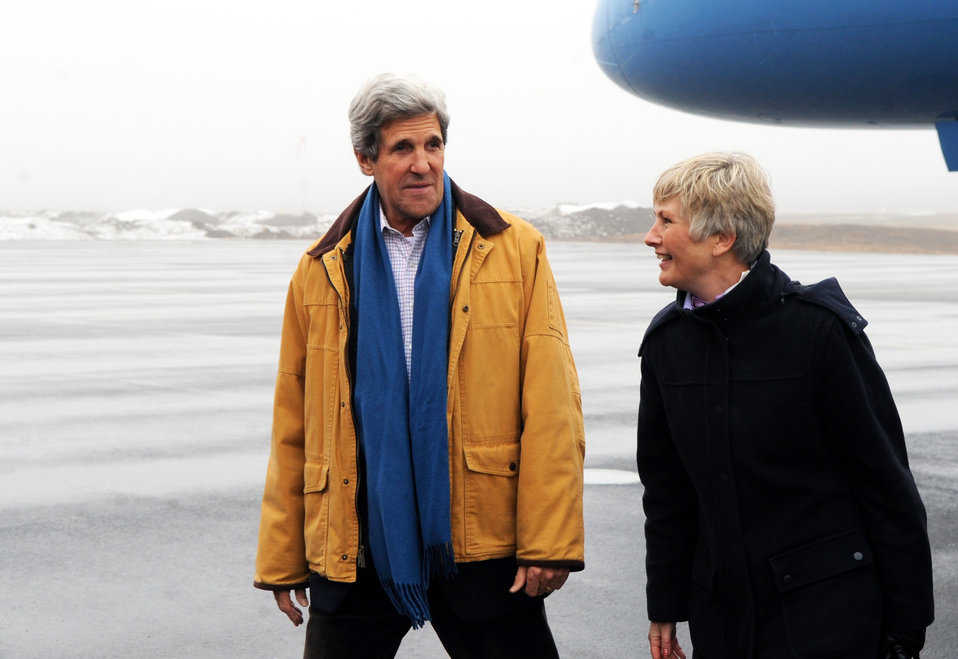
Secretary Kerry Arrives in Kiruna, Sweden

U.S. Secretary of State John Kerry is greeted by Swedish Ministry of Foreign Affairs' Chief of Protocol Caroline Vicini upon arriving in Kiruna, Sweden, for the Arctic Council’s Ministerial Meeting on May 14, 2013.